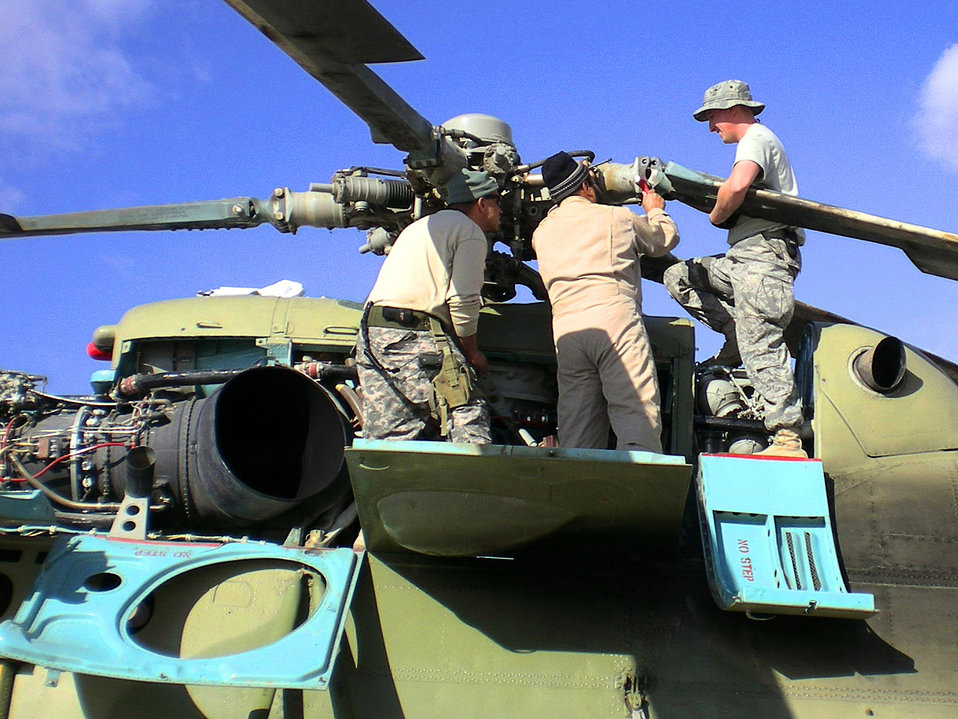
Airmen advise Afghans on Russian-made helicopters

Tech. Sgt. Dennis Flanagan advises Afghan air corps maintainers on the Russian-made MI-17 transport helicopter March 2 at Kandahar Air Base, Afghanistan. Sergeant Flanagan is assigned to the 718th Aircraft Maintenance Squadron from Kadena Air Base, Japan.